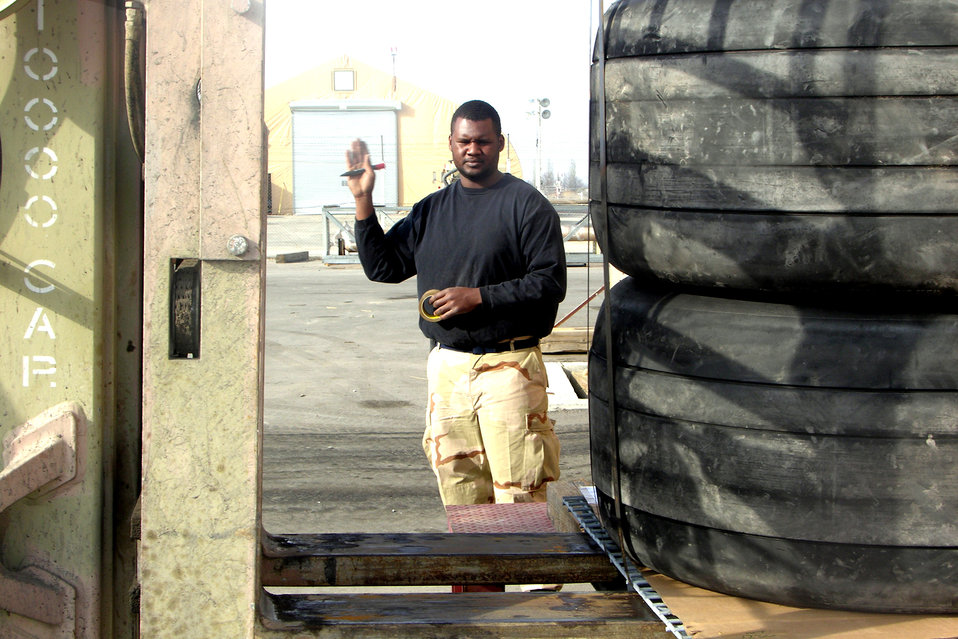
TMO Airmen keep people, cargo flowing

MANAS AIR BASE, Kyrgyzstan -- Staff Sgt. DeAndre Taylor guides a 10K-loader onto scales to check the weight of cargo. In one week, Traffic Management Office Airmen moved more than 500,000 pounds of cargo.